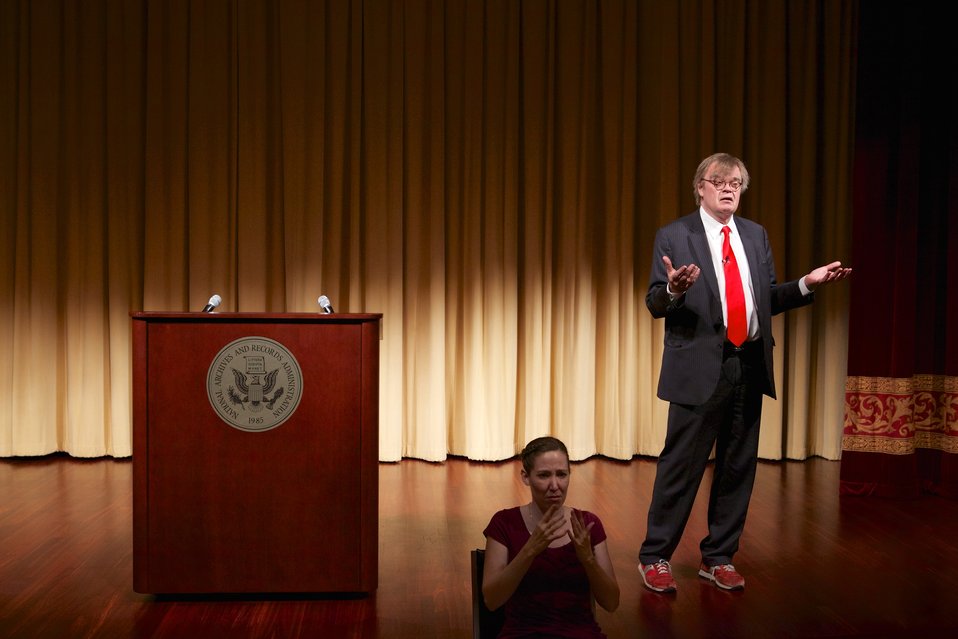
The Keillor Reader